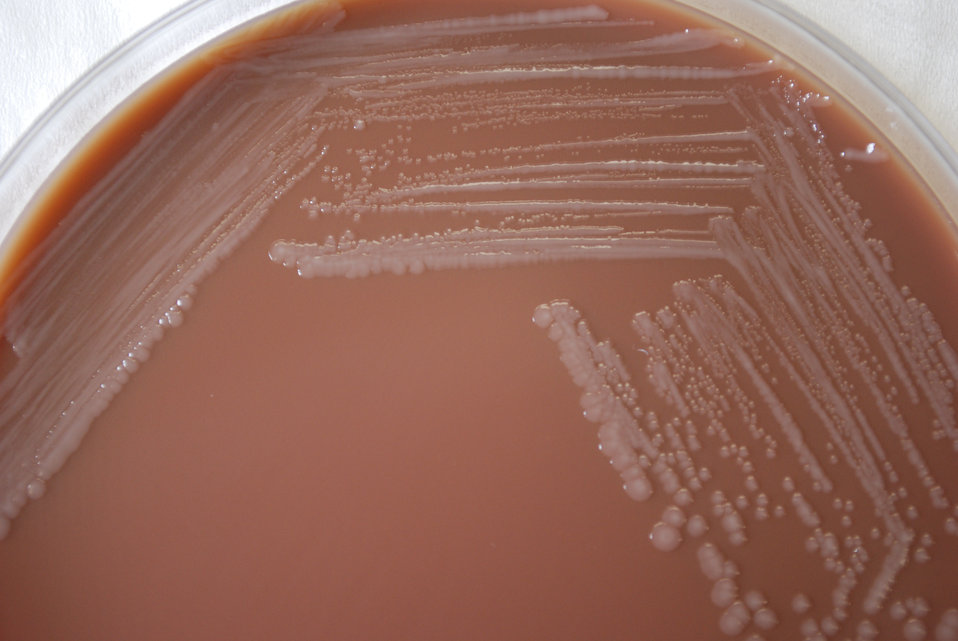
This closer view of PHIL 12262 depicts the colonial morphology displayed by Gram-negative Yersinia pestis bacteria, which was grown on a medium of chocolate agar, for a 72 hour time period, at a temperature of 37�C.